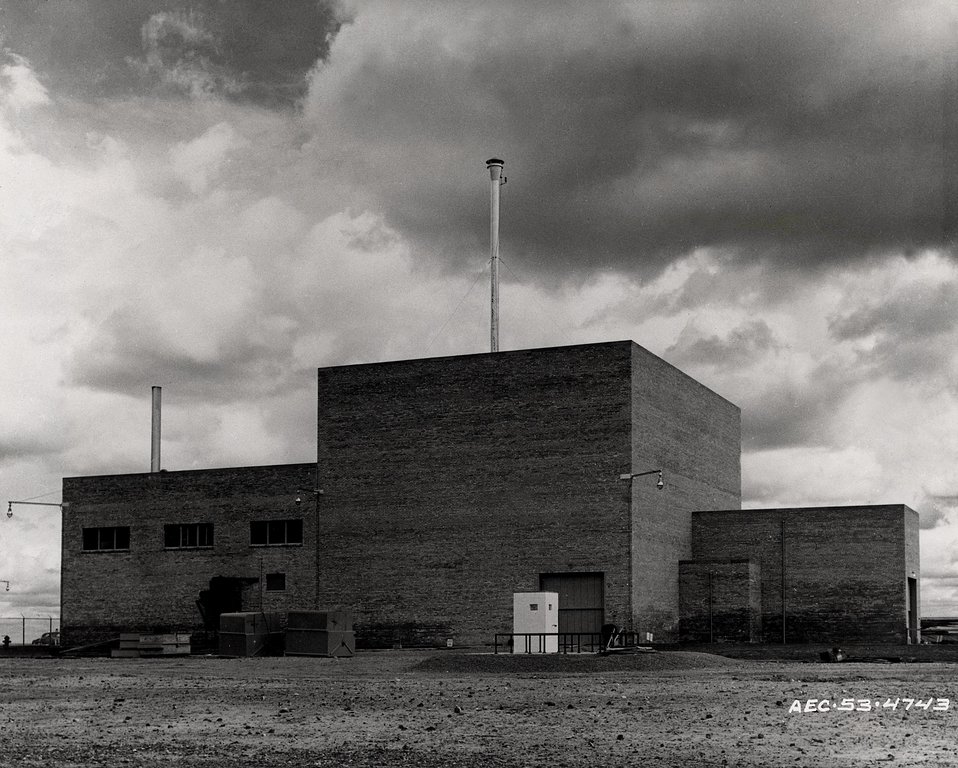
National Reactor Testing Station, Idaho Falls, Idaho showing an exterior view of the experimental breeder reactor
c.1953